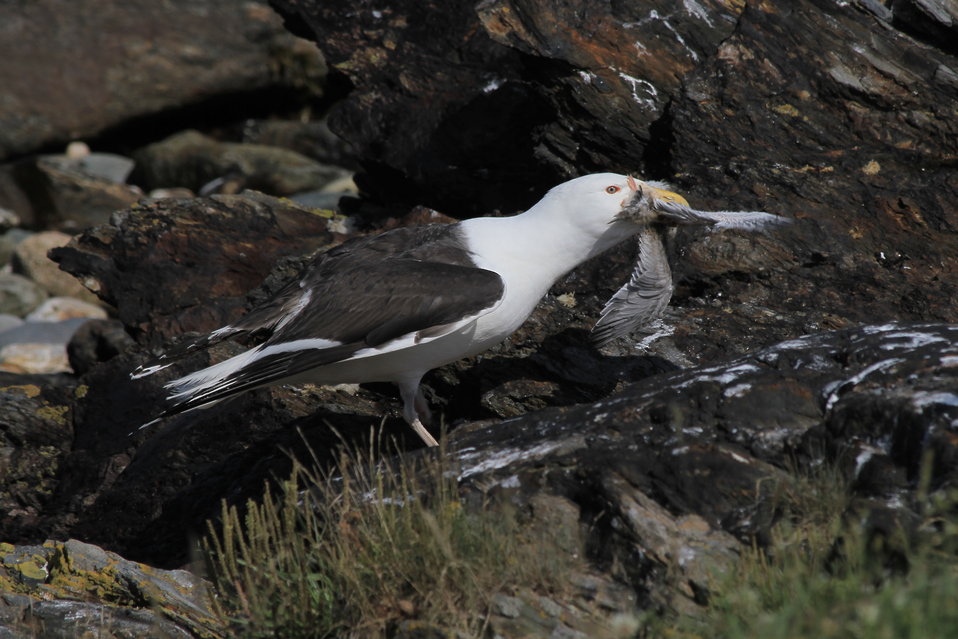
Great Black-Backed Gull Eating a Tern Chick

Metinic Island, Maine Coastal Islands NWR. Summer with the Seabirds blog: mainecoastalislands.wordpress.com/2010/07/23/metinic-isla...